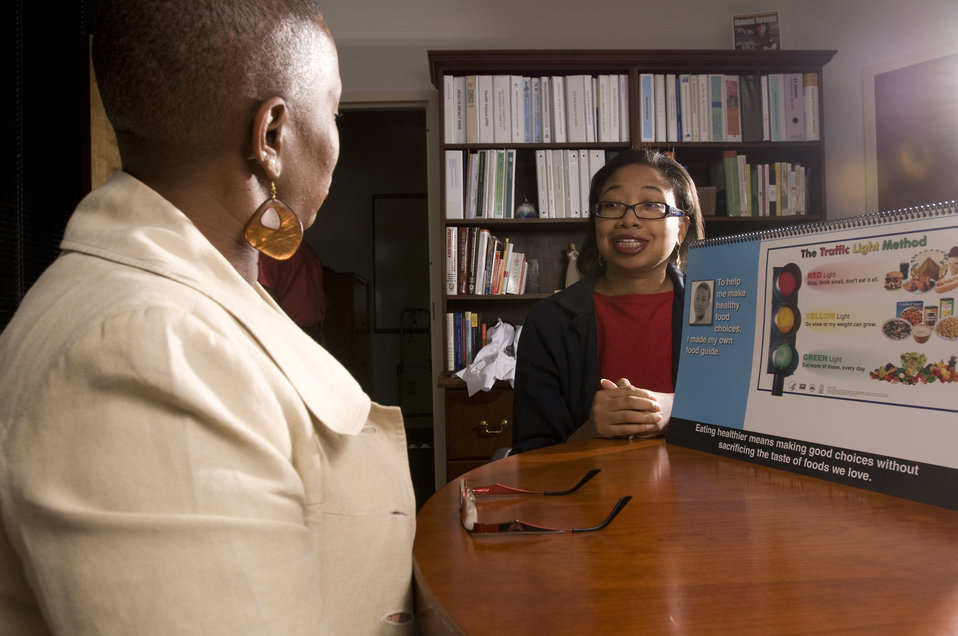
This image depicts a person with diabetes in the foreground listening to a community health worker familiar with the necessary diet needed to maintain control over the detrimental effects of this disease. The health worker was using a flip chart that, for the moment, was turned to a page discussing the use of the 'Traffic Light Method' to label foods.